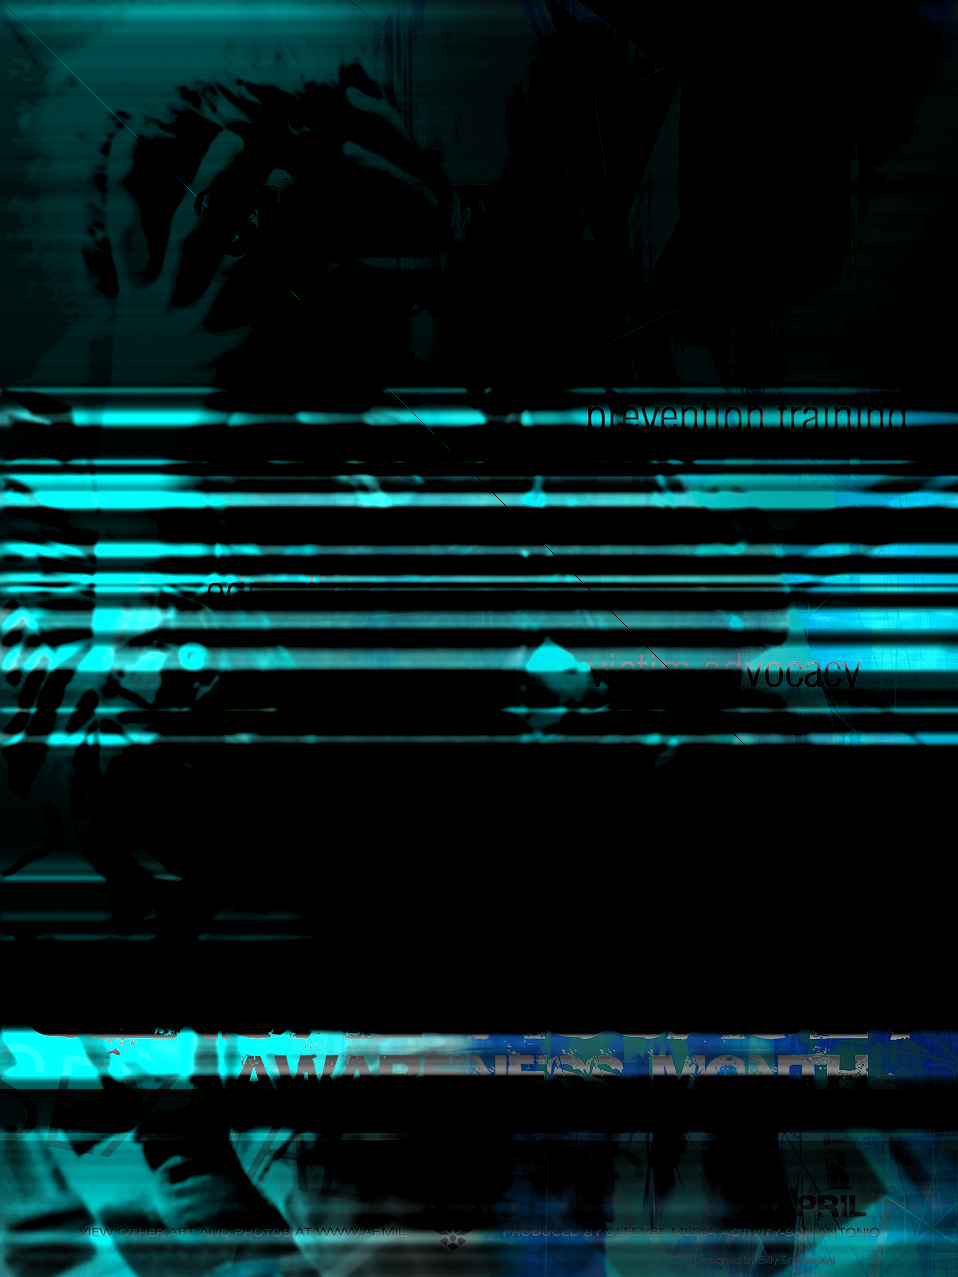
Sexual Assault